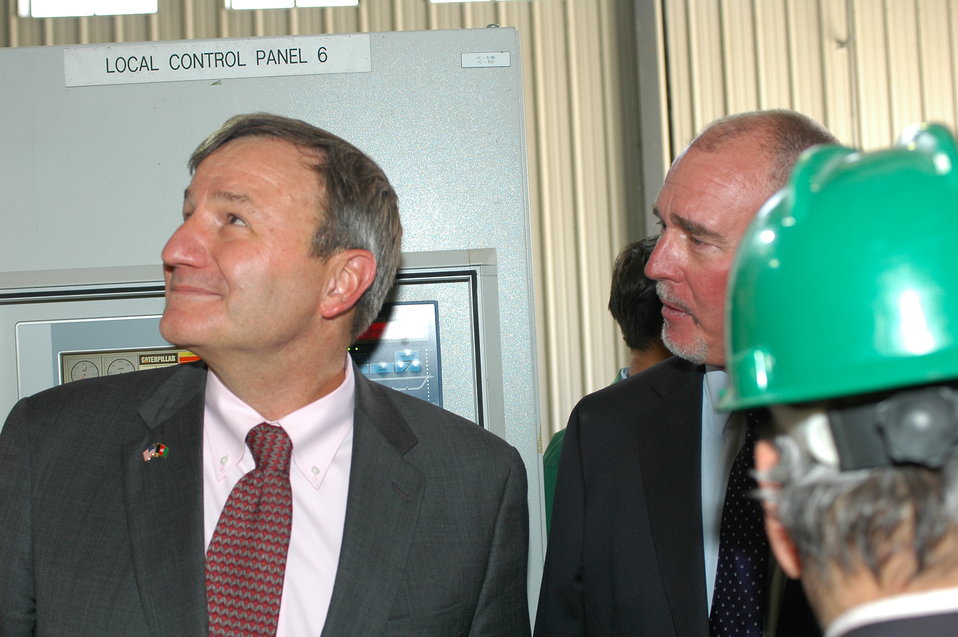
105 MW Tarakhil Power Plant Handover